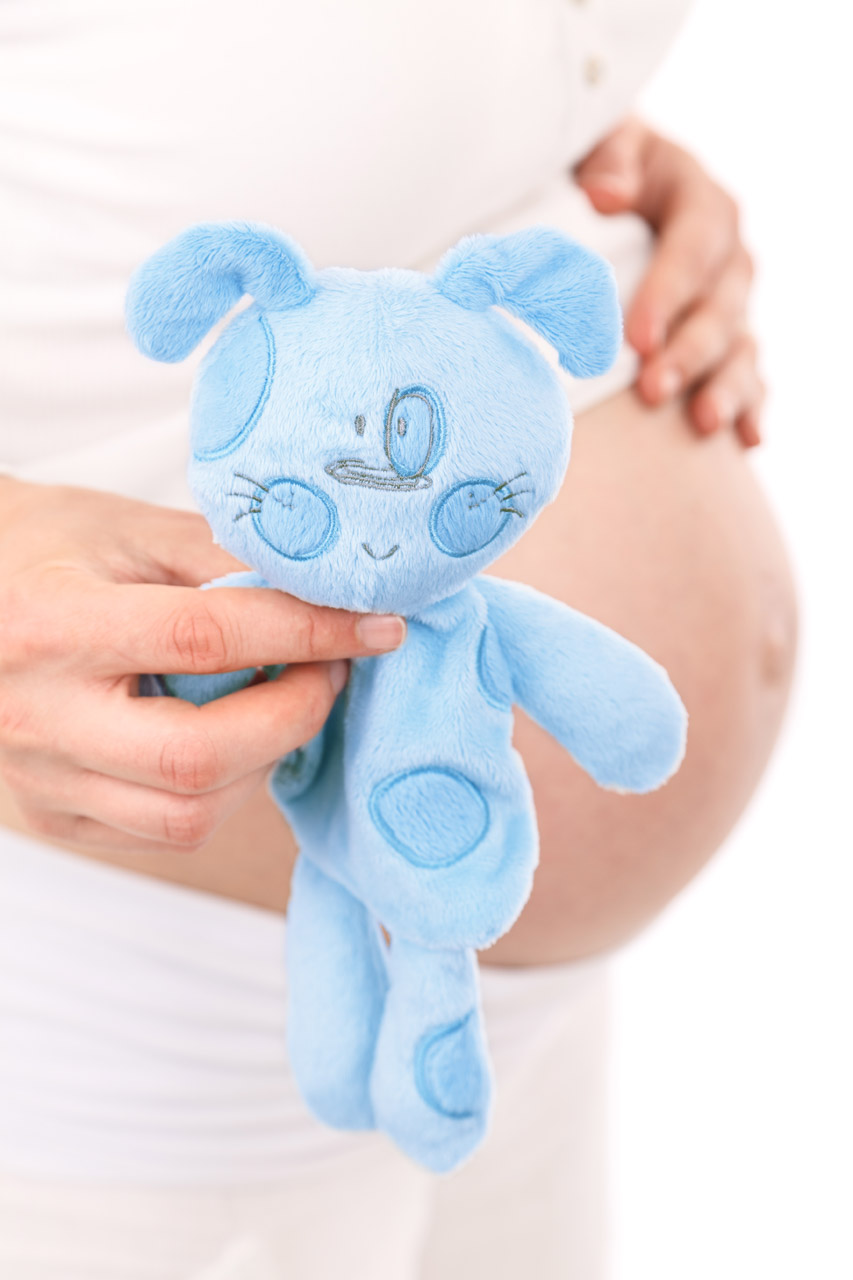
Expecting a baby boy

Blue rabbit toy for a baby boy.